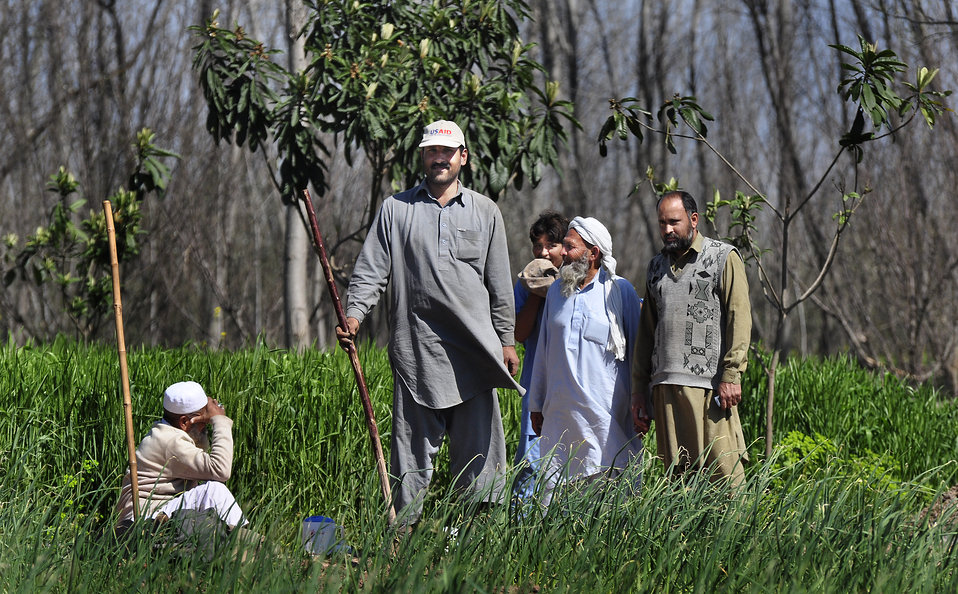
2011 March: USAID's Agricultural Recovery Program in 22 districts of Khyber Pakhtunkhwa, Punjab and Balochistan is an excellent example of the impact US development assistance can have. We have helped more than 500,000 farmers salvage the winter planting season and livestock after the floods. As a result, wheat farmers have nearly doubled their harvests. More than 5 million people have benefited. These photos show progress of the USAID Agricultural Recovery Project in Khyber Pakhtunkhwa.